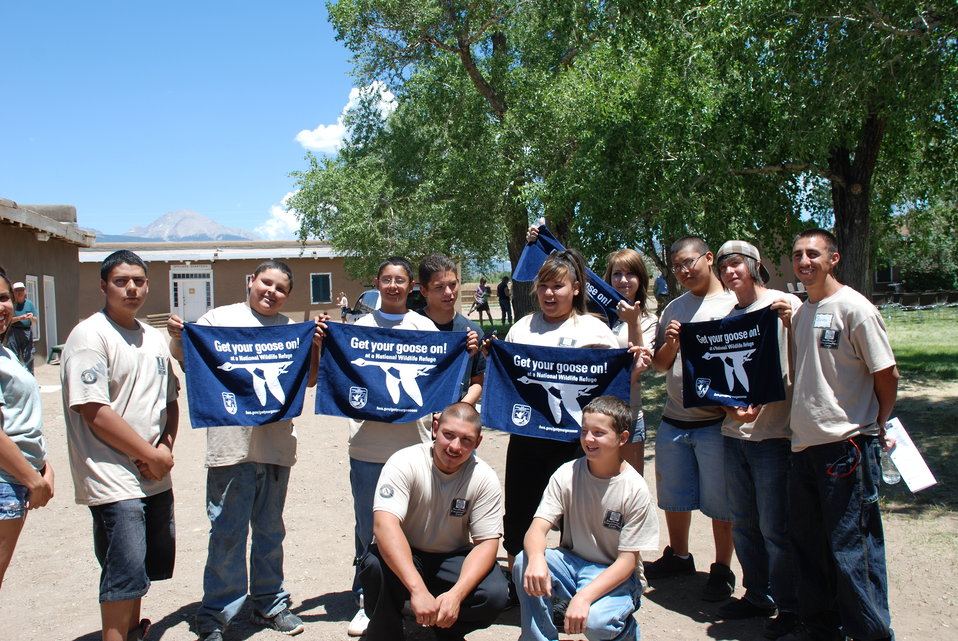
Southwestern Conservation Corps Get Their Goose On!